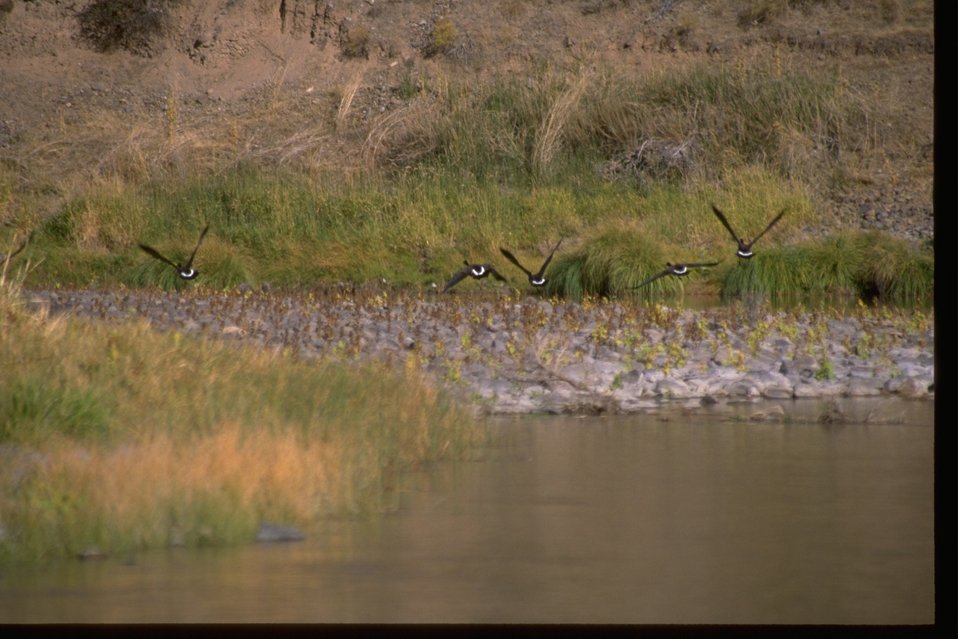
Low flying geese flying over the John Day River.